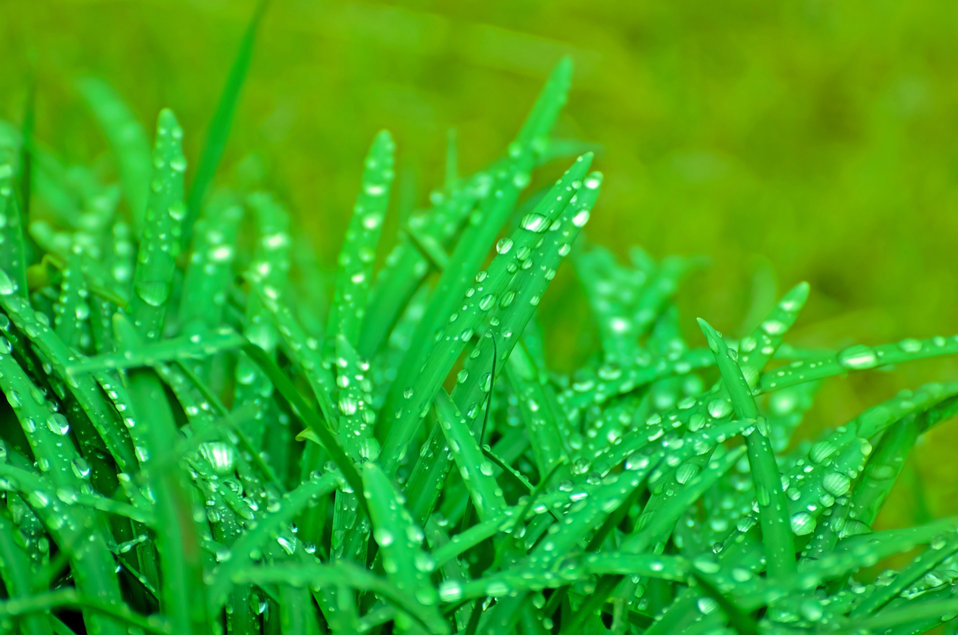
Water drops on the grass.